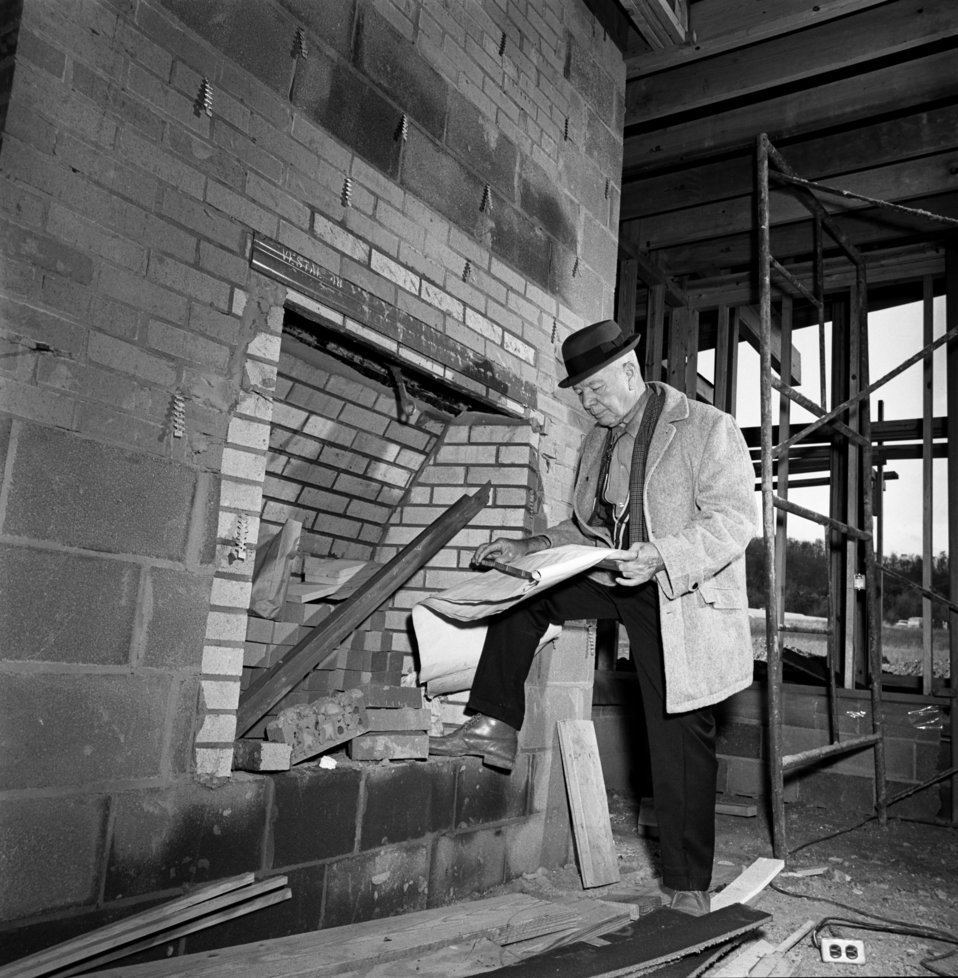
Fireplace work in Oak Ridge 1968

68-579d DOE photo Frank Hoffman 10-1968 Oak Ridge Tennessee